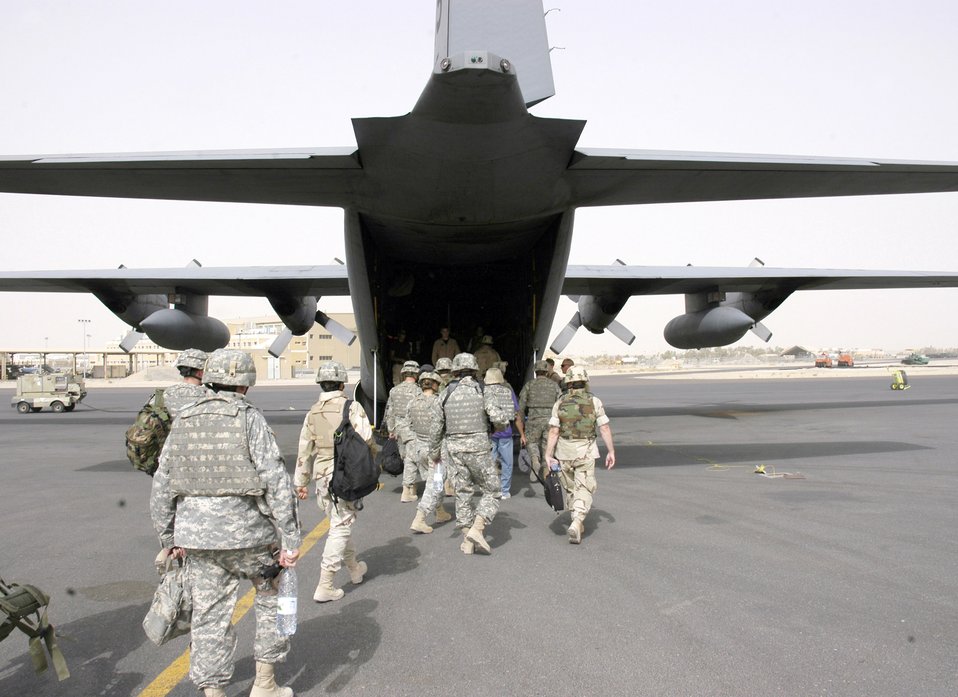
Reserve, Guard leaders speak at AFA convention

Units like the 386th Air Expeditionary Wing in Southwest Asia are composed of active duty Airmen as well as Air National Guard and Air Force Reserve servicemembers. The Reserve and Air Guard top leaders briefed attendees at the Air Force Association's Air and Space Conference Sept. 27 on importance of the total force.